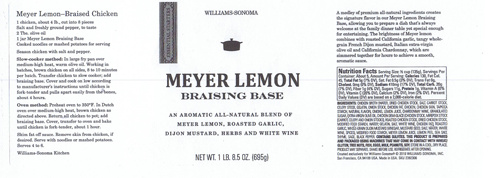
Meyer Lemon Braising Base

August 28, 2013 – Premier Foods, LLC Announces The Recall Of Products Sold At Williams-Sonoma For Undeclared Allergens.